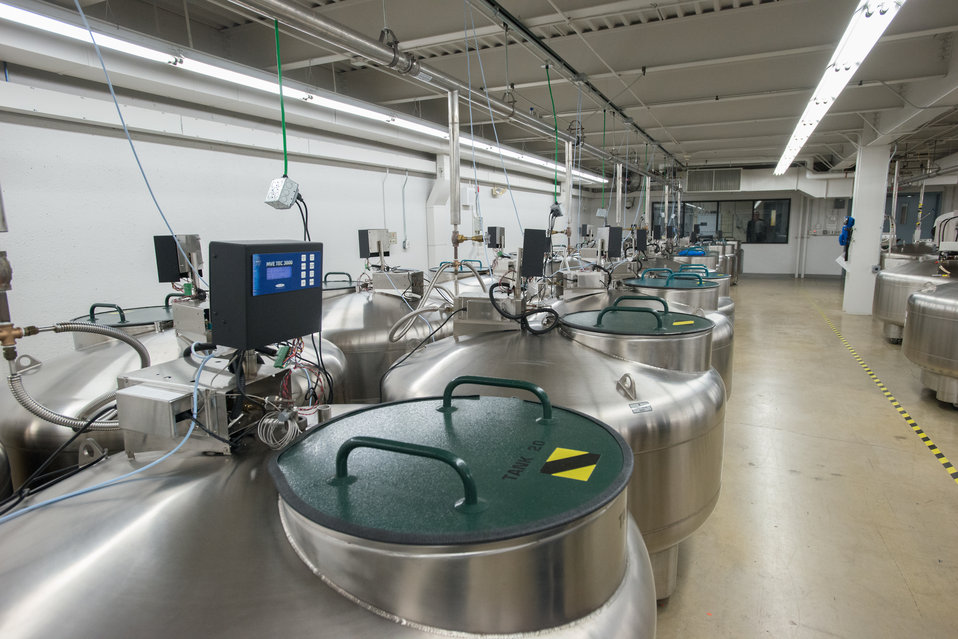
This is the U.S. Department of Agriculture's (USDA) Agriculture Research Service (ARS) National Center for Genetic Resources Preservation (NCGRP) Cryogenic Storage Vault in Ft. Collins, CO on Wednesday, Nov. 6, 2013. The vault currently operates more than 45 cryogenic tanks that hold animal germplasm, plant tissue culture, and seeds that are stored at -196 °C (-321 °F) in liquid storage or to -193 C (-315 °F) in vapor storage degrees centigrade (-321 °F). NCGRP is the largest agricultural gene bank facility in the U.S. The NCGRP staff conducts groundbreaking research to develop more efficient and effective means for preserving plant and animal germplasm, and for better understanding the genetic structure of these invaluable materials. The research findings, preservation techniques, and specialized technology developed by the NCGRP have been adopted by gene banks around the world: many international scientists travel to the NCGRP for research and training.